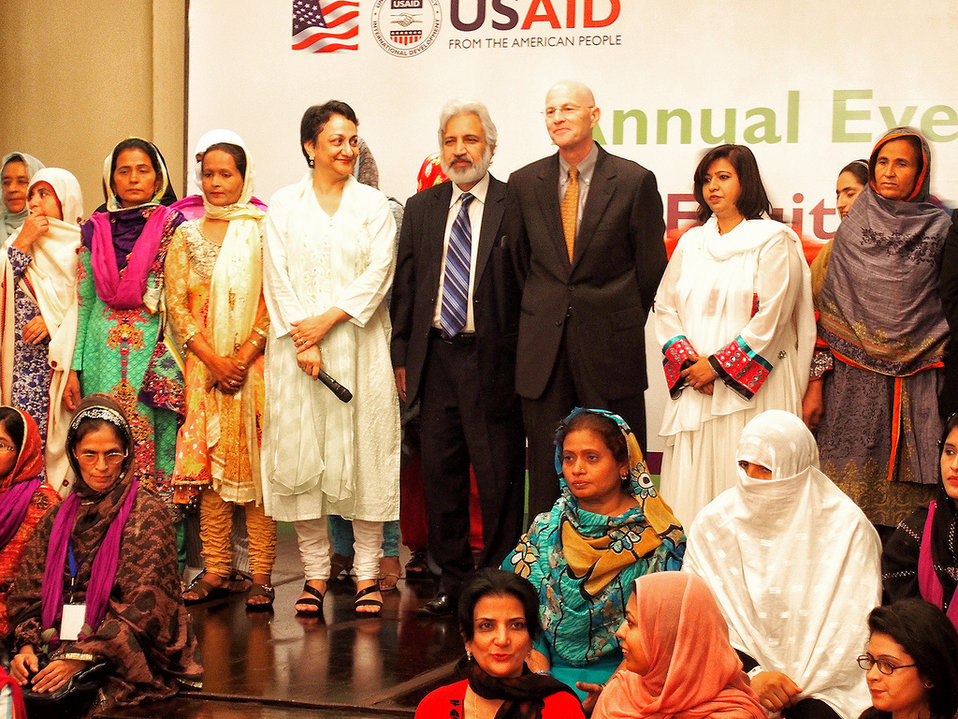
Gender Equity Program, Pakistan

USAID and Aurat Foundation annual event in Islamabad, Sept. 20, 2013